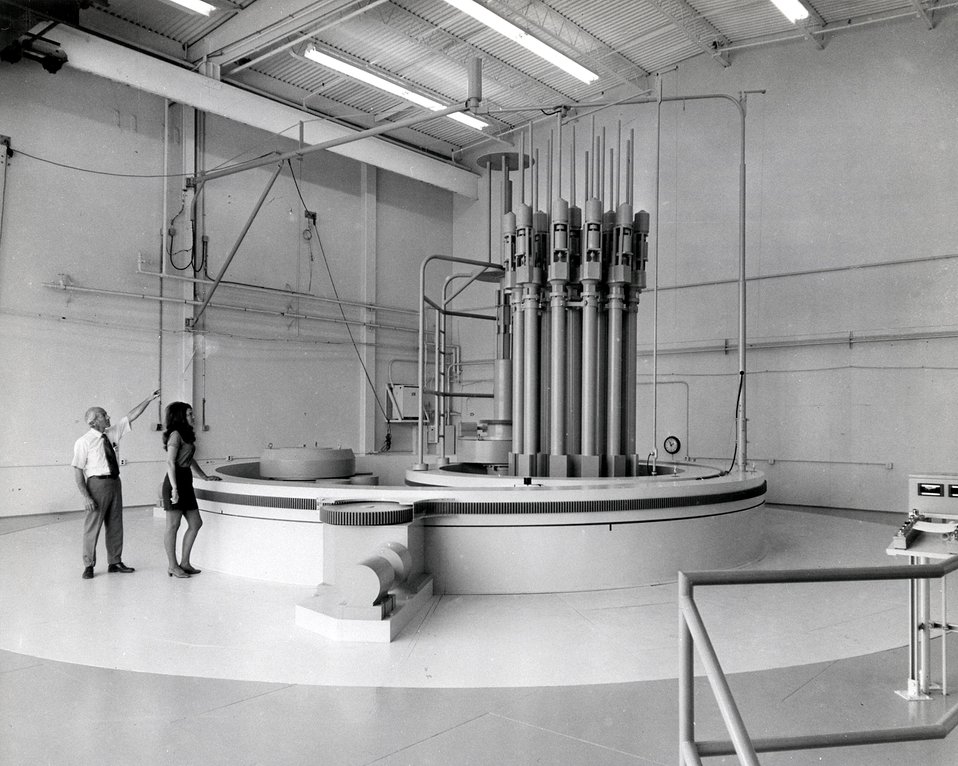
Top shield design work for the LMFBR demonstration plant will be enhanced by a full-scale mockup at the AEC's Liquid Metal Engineering Center in the Santa Susana Mountains, near Canoga Park, California. Circa 1973.